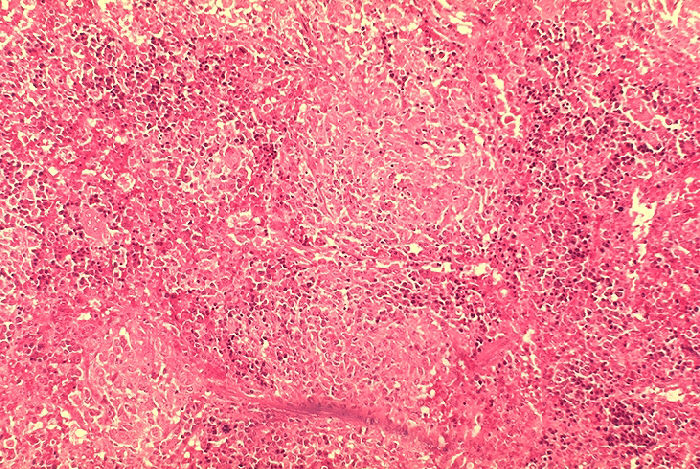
Histopathology of guinea pig spleen in experimental Brucella suis infection.